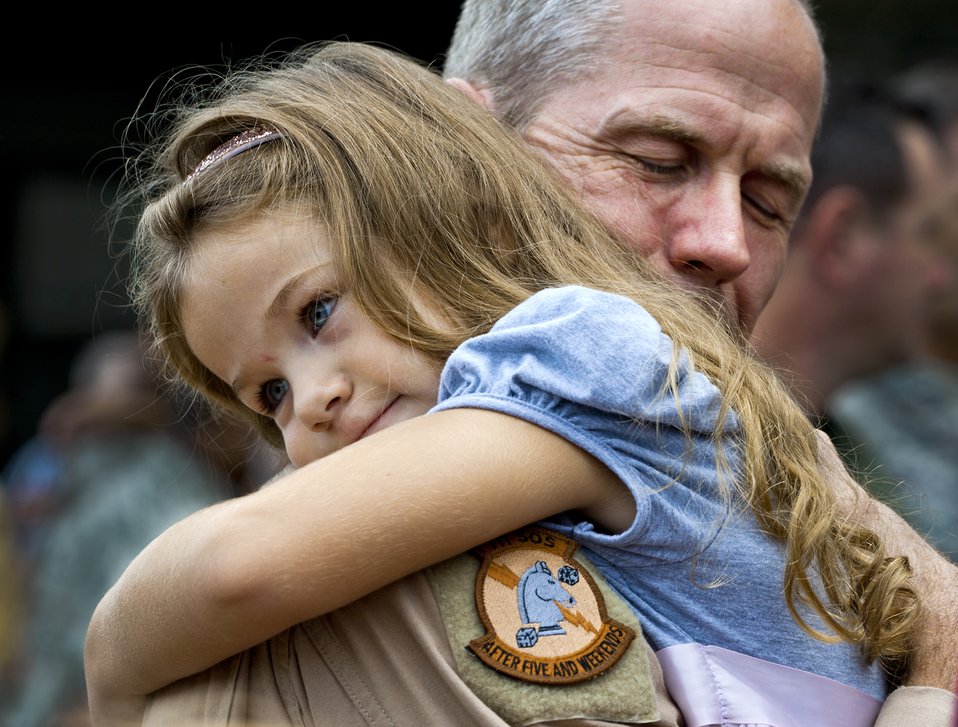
A Warm Welcome

Lt. Col. Thomas Frazier receives a hug from his daughter Aug. 7, 2011 after returning from a deployment to Southwest Asia. More than 25 Air Force Reserve Airmen were welcomed back home during a homecoming party at Duke Field, Fla. Colonel Frazier is with the 711th Special Operations Squadron there.